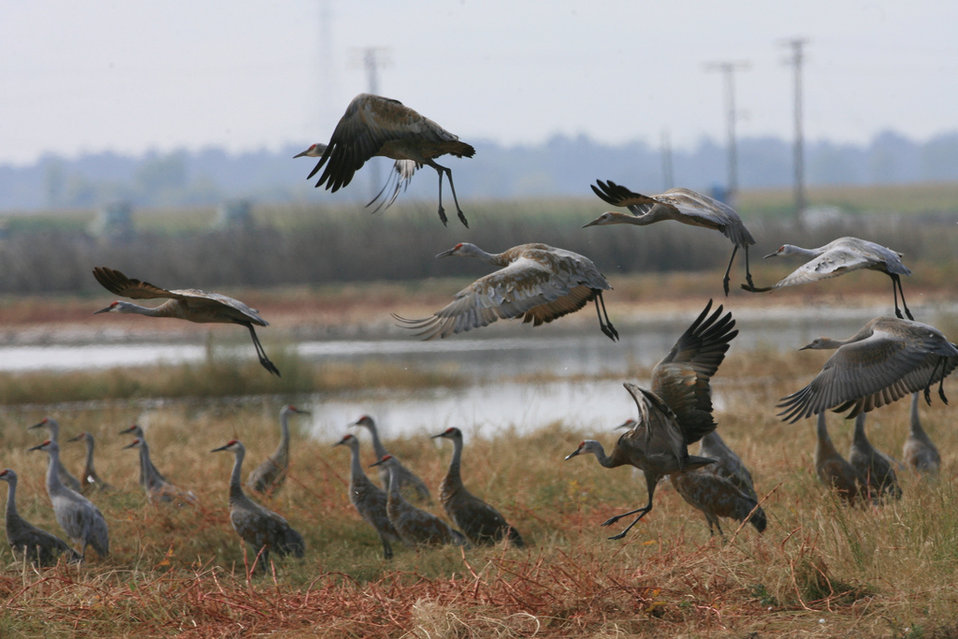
sandhill cranes

Merded National Wildlife Refuge, CA